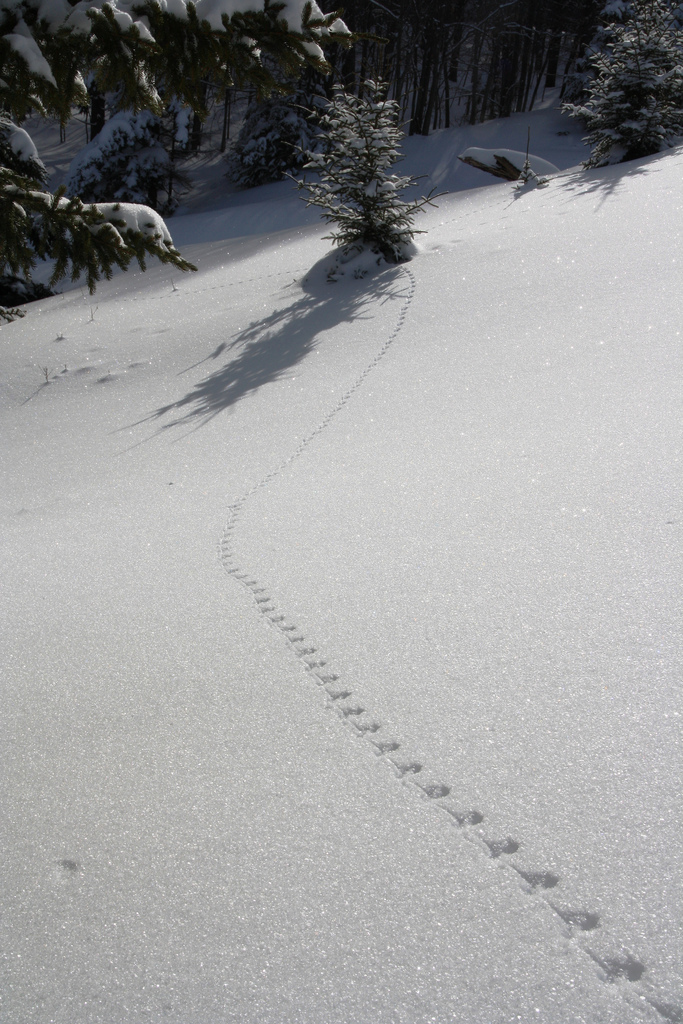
Photo of the Week - Tracks in Snow (WV)

Photo of the Week - 1/7/13

Deer mouse tracks in fresh powder photographed at Canaan Valley National Wildlife Refuge.